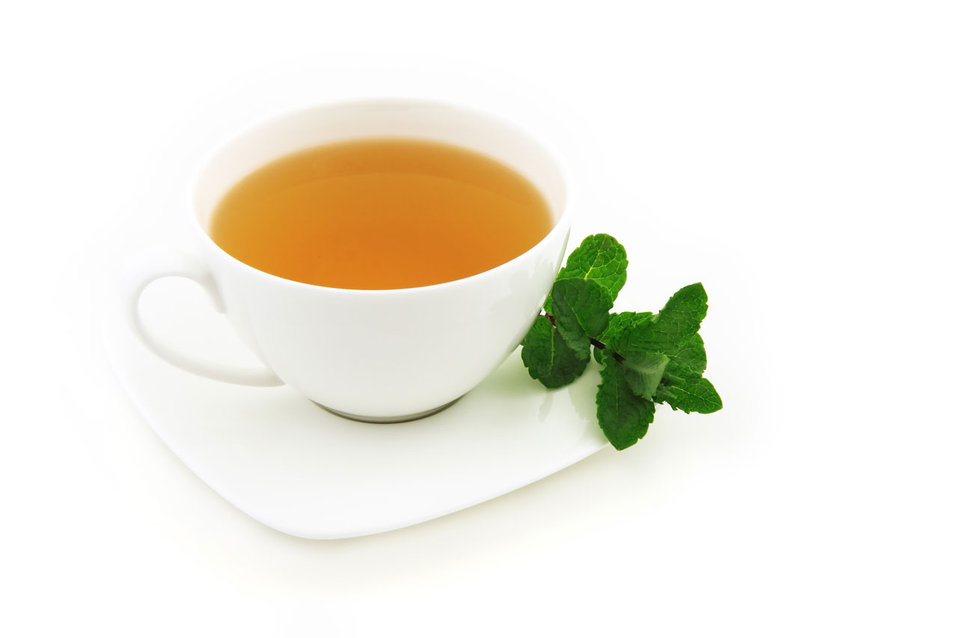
Mint tea on white background.